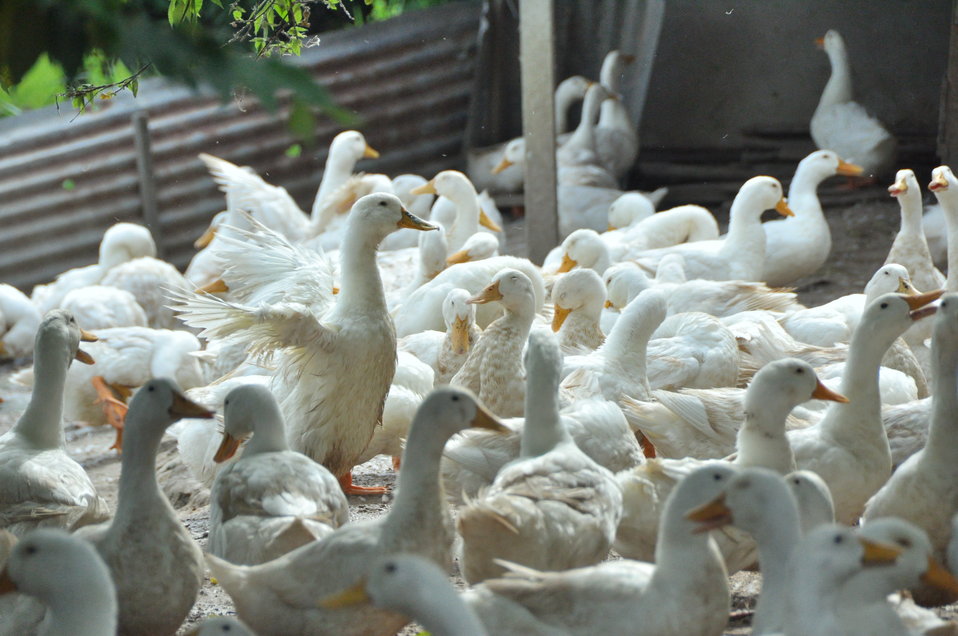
Duck farm in Can Tho

USAID Vietnam